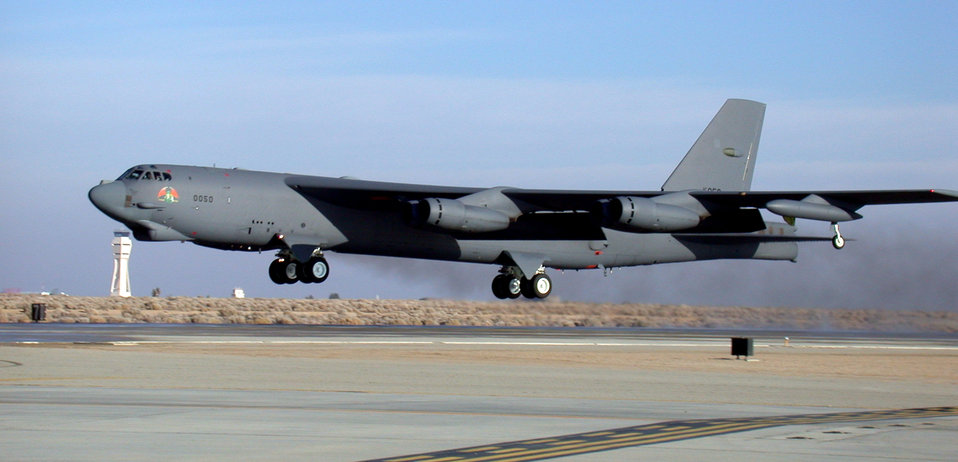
B-52 improvement

EDWARDS AIR FORCE BASE, Calif. -- A B-52 Stratofortress takes off from Edwards Air Force Base, Calif., on a flight to test its new avionics system. The new system is part of the B-52 Avionics Midlife Improvement program. Flight tests began in December and will run through March 2004. The upgrade is the most significant improvement made to the bomber in the last 15 years.